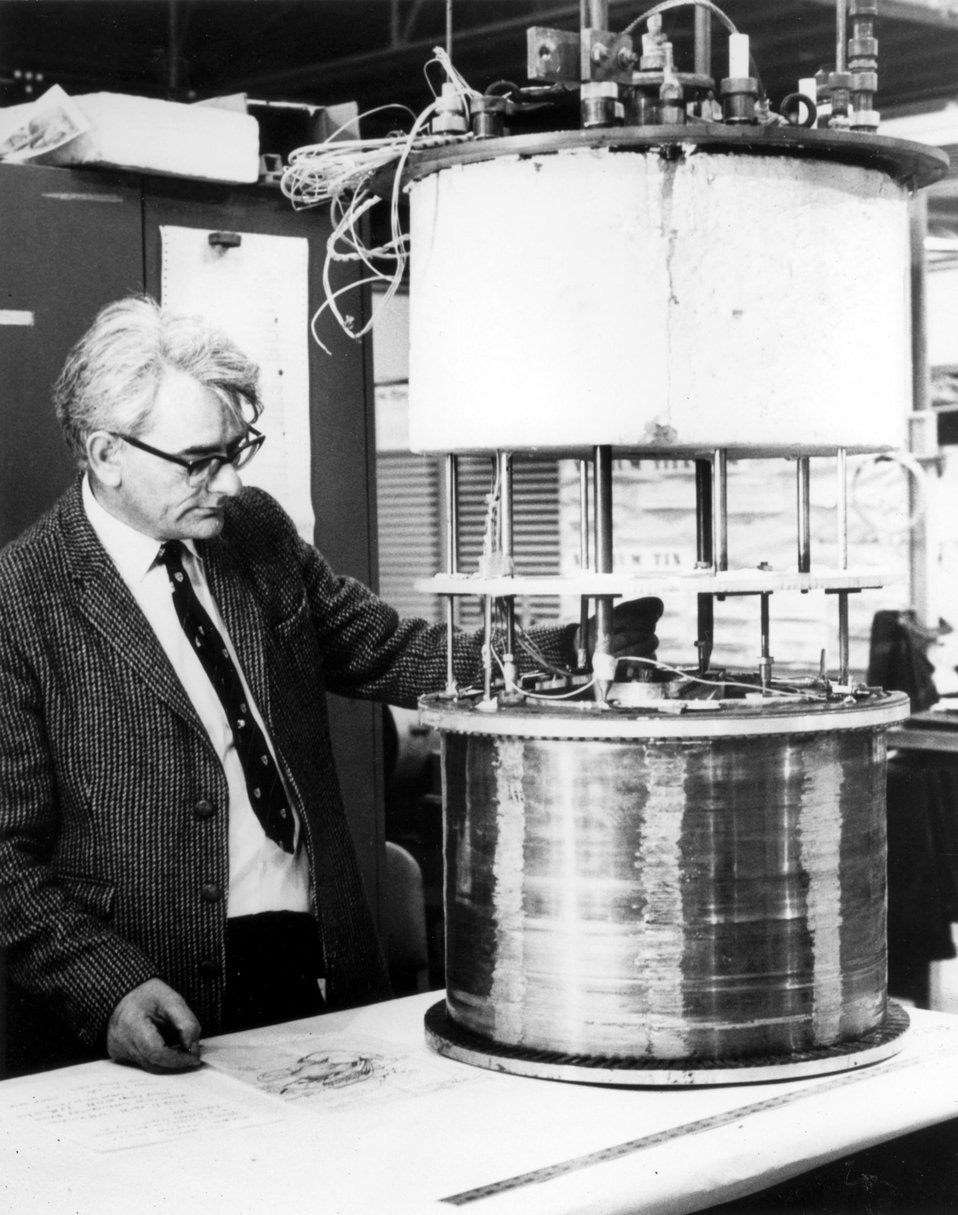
Argonne engineer inspects an experimental superconducting magnet assembly.
c.1970